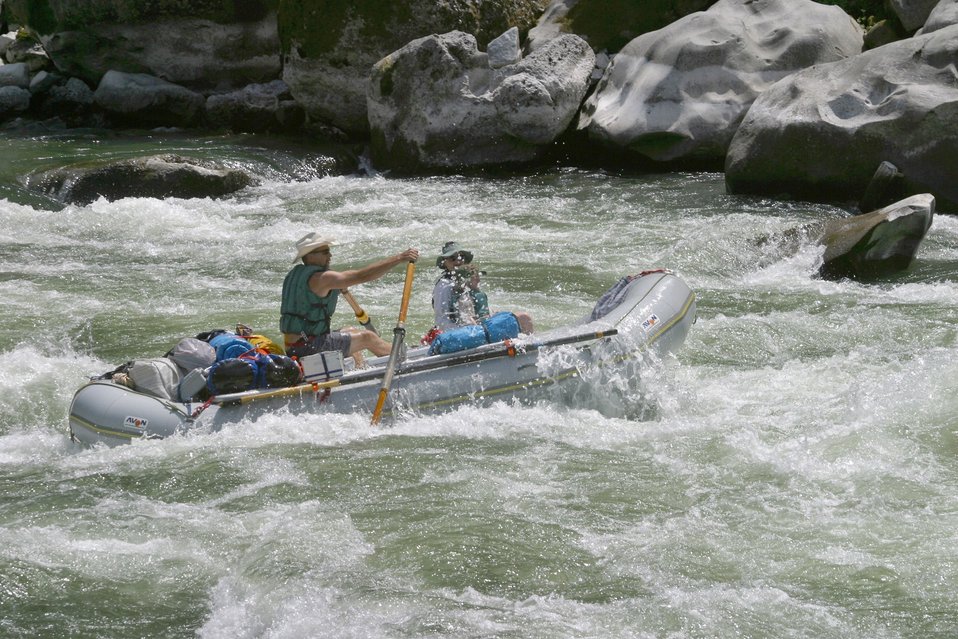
Wild section of the Rogue River from Grave Creek to Foster Bar May 19 to May 22.